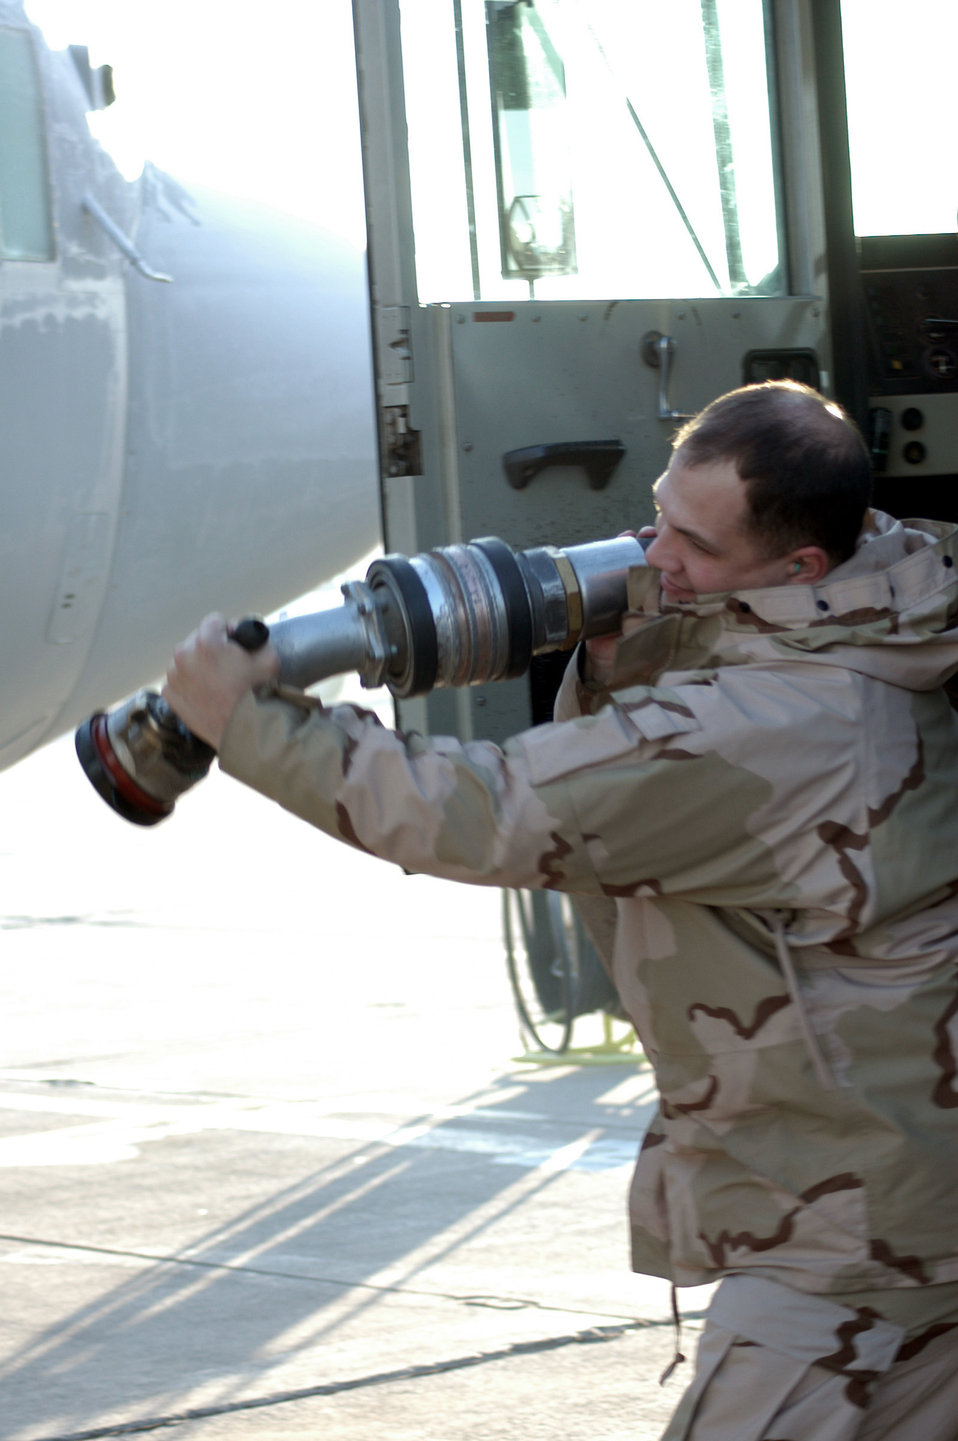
Deployed fuels technicians keep OEF airlift rolling

KARSHI-KHANABAD AIR BASE, Uzbekistan -- Senior Airman Seth Rindo pulls a fuel hose from a fuel truck to refuel a C-130 Hercules here Jan. 19. He is a fuels distribution journeyman deployed from Grand Forks Air Force Base, N.D., to the 416th Expeditionary Mission Support Squadron fuels management flight here.